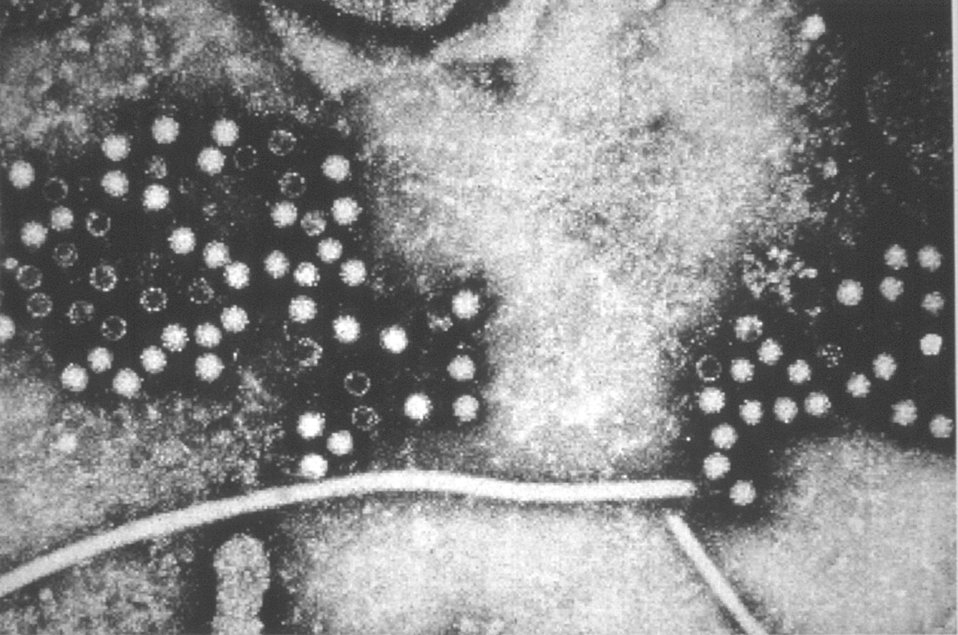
This electron micrograph depicts hepatitis-E viruses (HEV), provisionally classified as members of the Caliciviridae family.